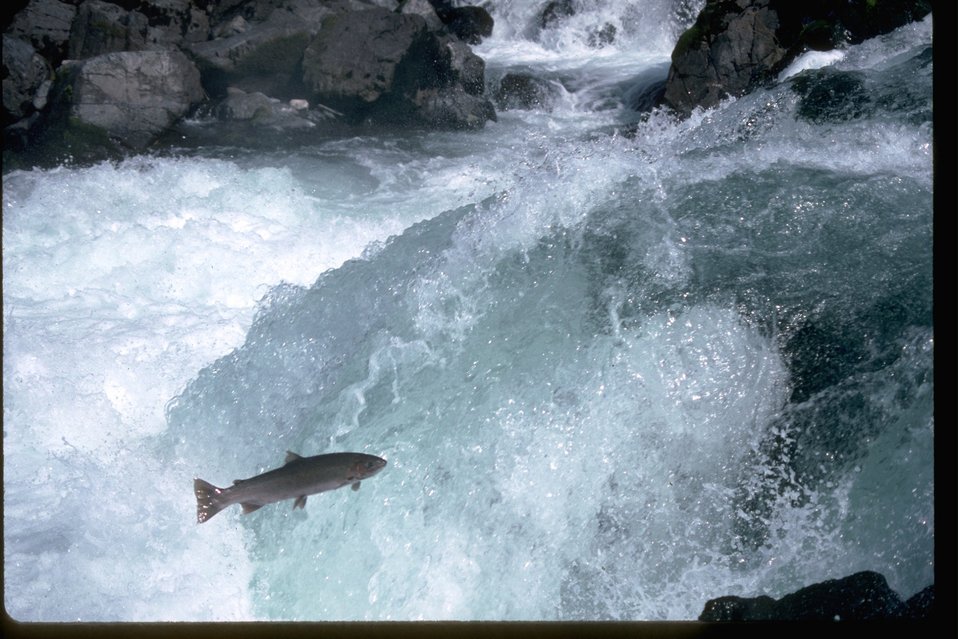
Salmon or Steelhead jumping up falls.